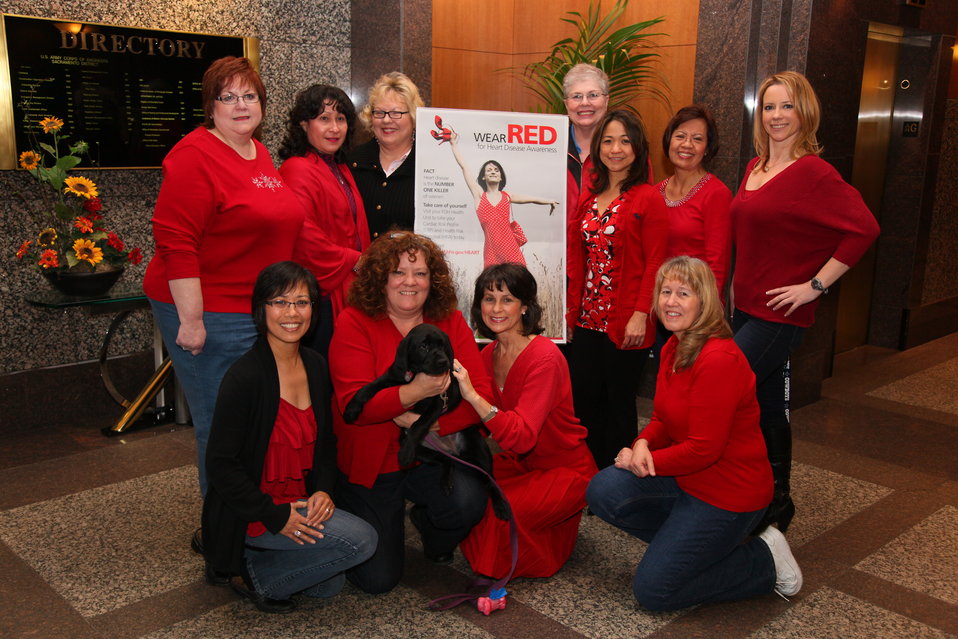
Heart Disease Awareness

Heart disease is said to be the number one killer of women—causing more deaths among women than all forms of cancer. Employees from U.S. Army Corps of Engineers Sacramento District are showing their support by wearing red on Feb. 3, 2012—the first Friday of American Heart Month. (From left to right) Back: Raydine Raab, Jellies Machel, Patti Adair Ahle, Mary Schwarz, Ofelia Sarmiento, Bella Almaraz, Elizabeth Henson. Front: Monina Isaac, Holly Conrad with Katana, Jan Luoma, Roxanne Bump.